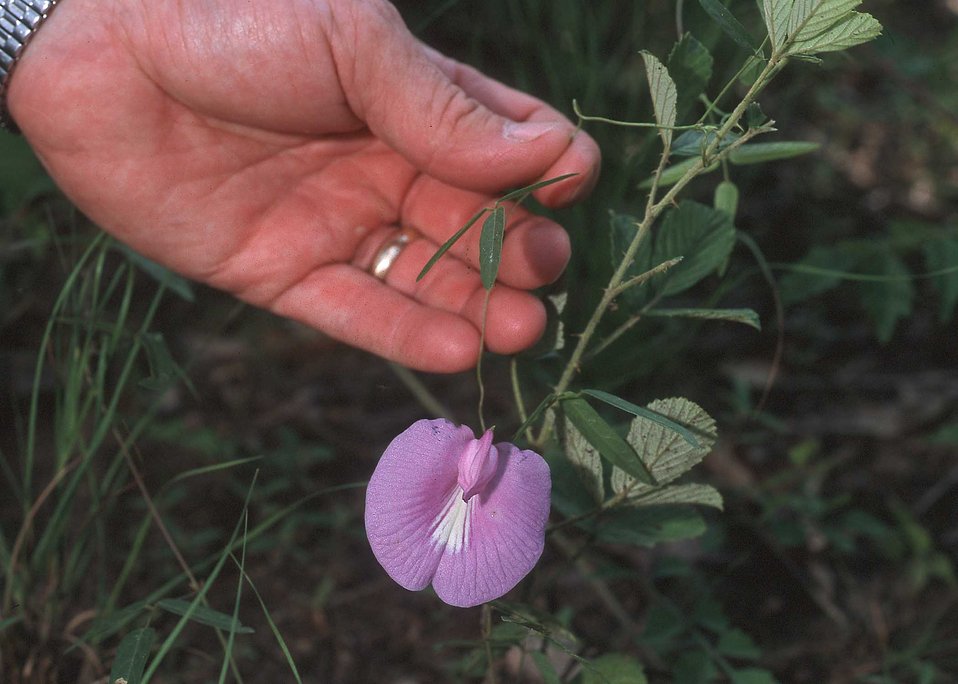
This fast growing climber is a fairly common tender perennial species that produces two inch, pinkish blue flowers in mid to late Summer. They provide quick covers for lattice, trellis, arbor and chain-link fence, and are a favorite food source for butterflies.